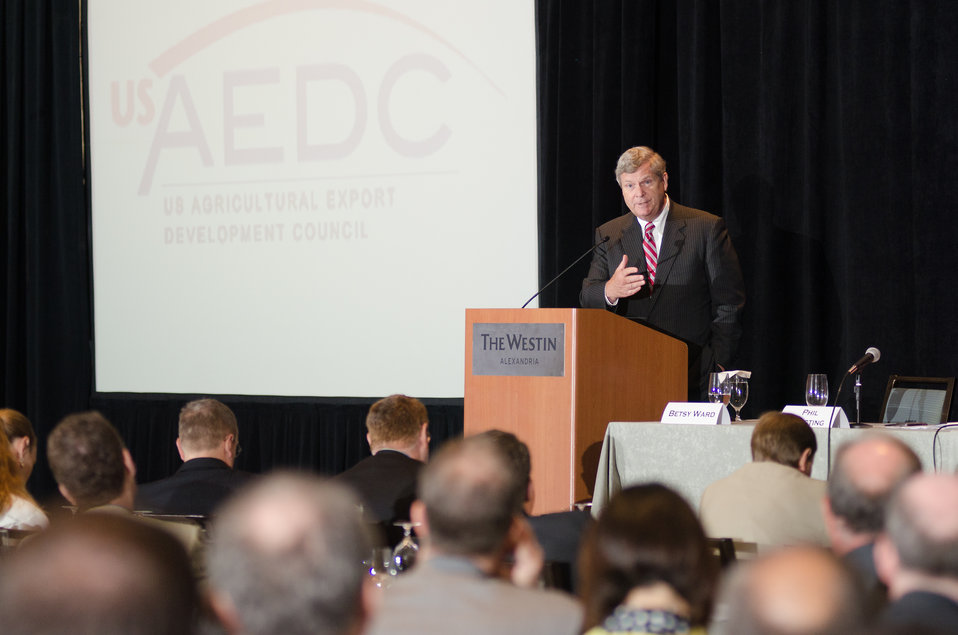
Agriculture Secretary Tom Vilsack presents keynote remarks at the U.S. Agricultural Export Development Council (USAEDC) Attaché Seminar, at the Westin Alexandria, in Alexandria, VA, on Wednesday, July 10, 2013. USAEDC is a non-profit private sector trade association that provides an exchange and coordination of information to promote the export of the products of U.S. agriculture. Their membership includes U.S. commodity trade associations, farmer cooperatives and state regional trade groups from around the country. In the interest of U.S. agricultural growers and producers their export promotion efforts, work in conjunction with the U.S. Department of Agriculture Foreign Agricultural Service.